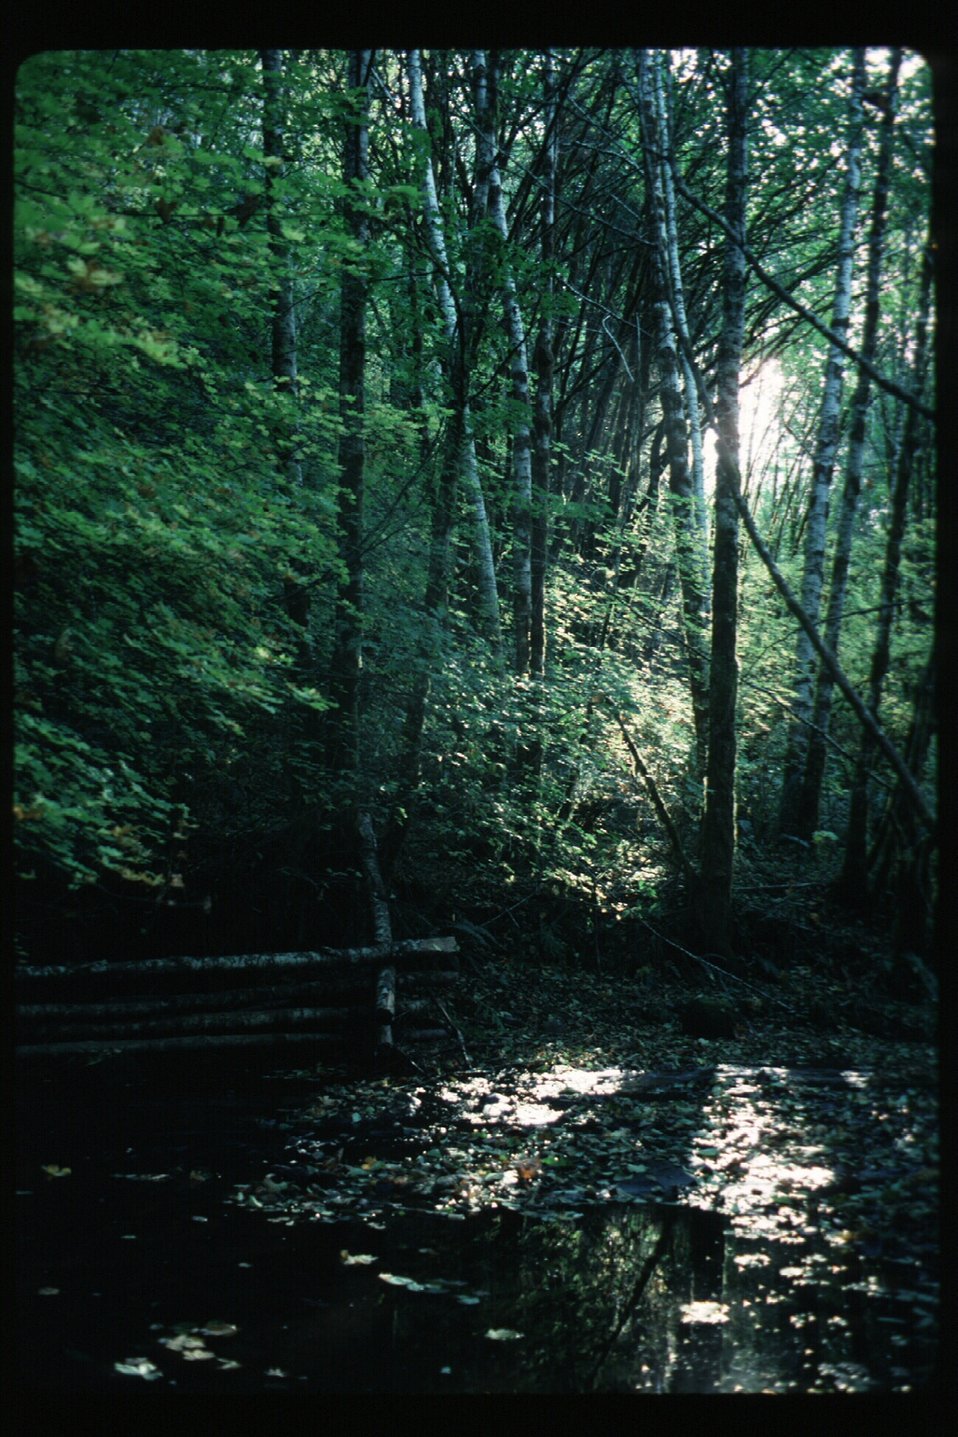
Forestry Couer d'Alene Field Office UCSC Upper Columbia Salmon Clearwater